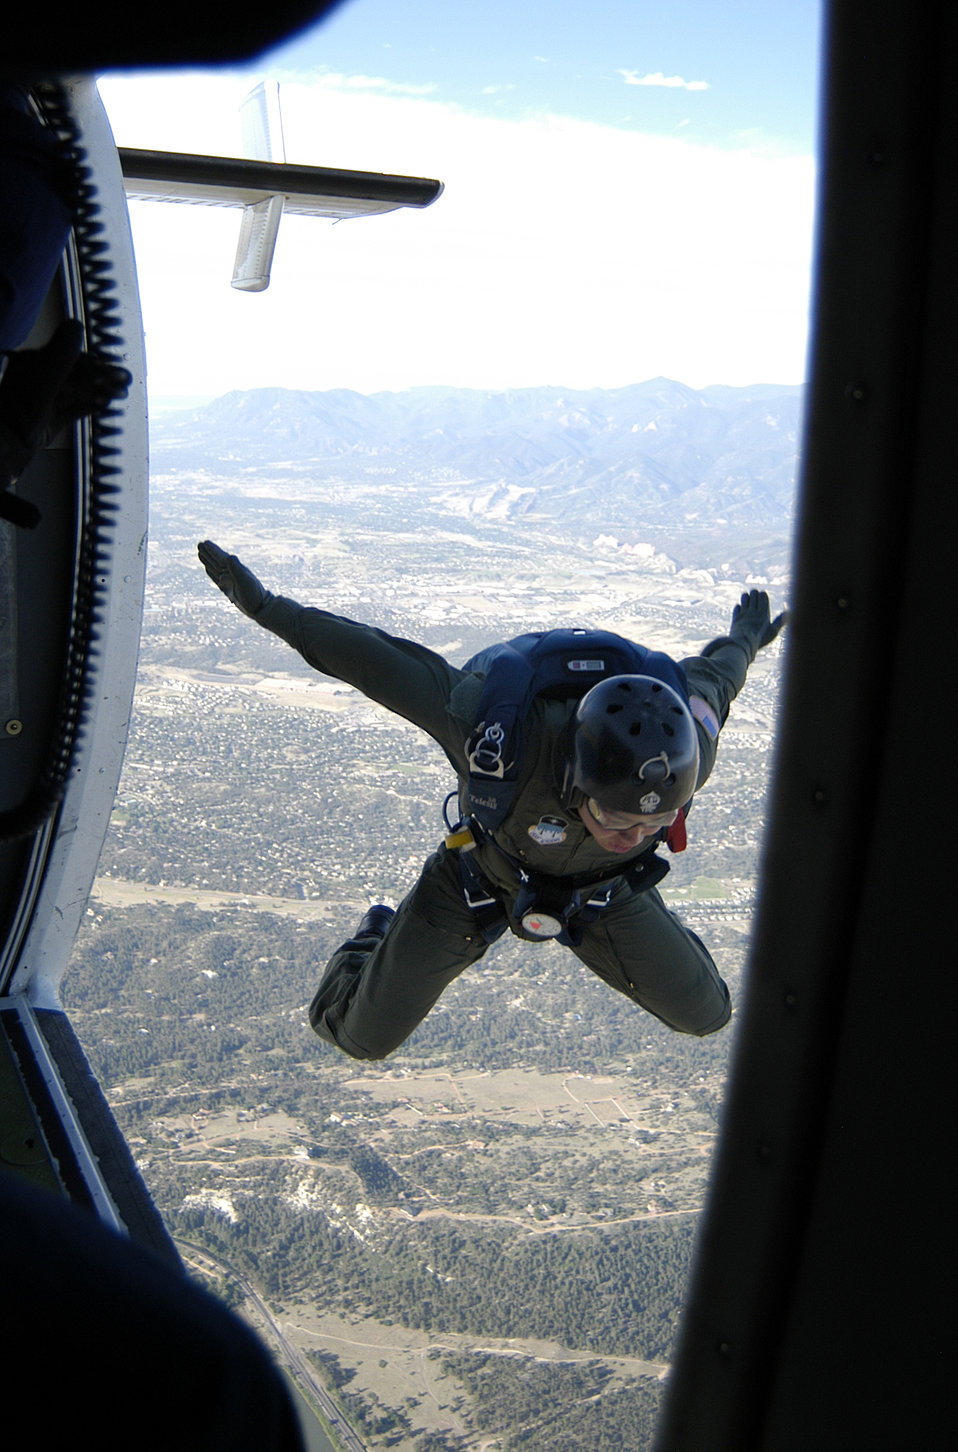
Earning those jump wings

U.S. Air Force Academy Cadet 3rd Class Thomas Baker departs a Twin-Otter jump plane from 4500 feet above the academy on June 27 during Airmanship 490, Basic Parachuting, an airmanship program where cadets earn their basic jump wings after successfully completing five free-fall jumps.